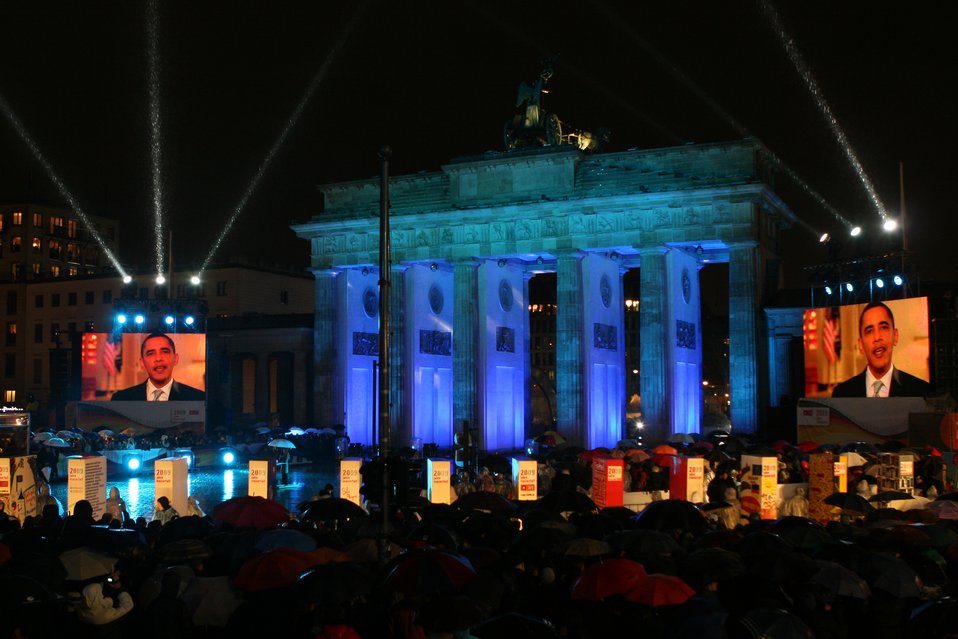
President Obama's video message appeared during the Freedom Festival in Berlin, Germany, where U.S. Secretary of State Hillary Rodham Clinton represented the United States at the 20th anniversary celebration of the fall of the Berlin Wall, Nov. 9, 2009.